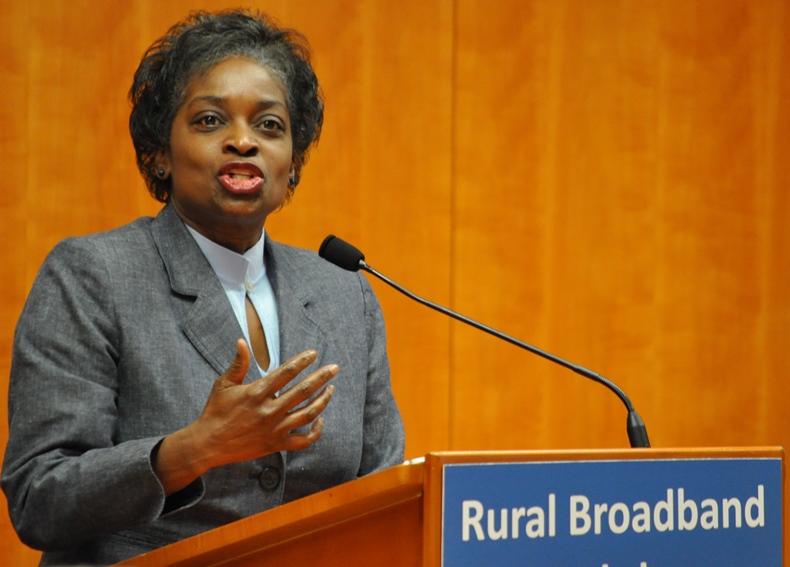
Rural Broadband Workshop: March 19, 2014

Introductory Remarks for Panel 1 from FCC Commissioner Mignon Clyburn